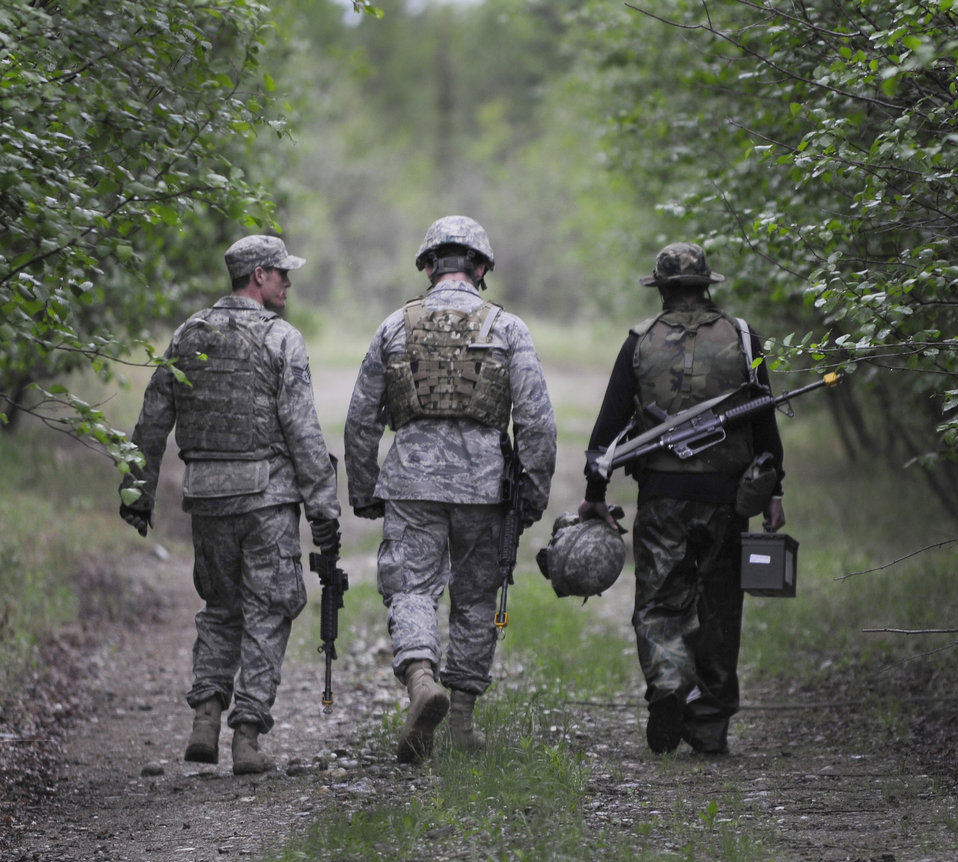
Dismounted patrol preparedness exercise

Airmen discuss the location of buried